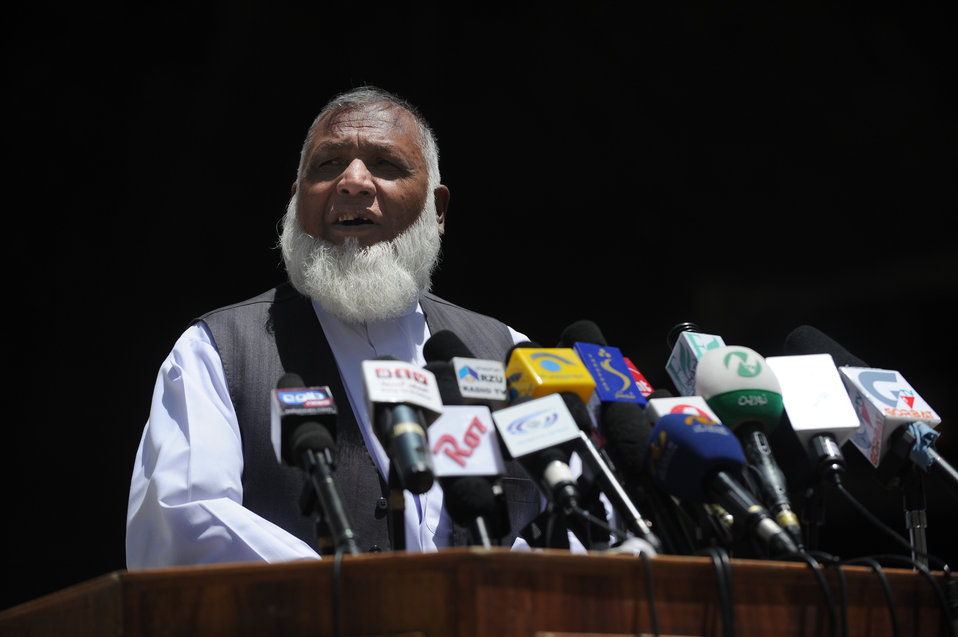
Baghlan Governor Mohammad Akbar Barakzai makes remarks during a ceremony to mark the beginning of renovations at the Salang Tunnel on the border of Parwan and Baghlan Provinces, Afghanistan, on Wednesday, June 15, 2011. (S.K.Vemmer/Department of State)